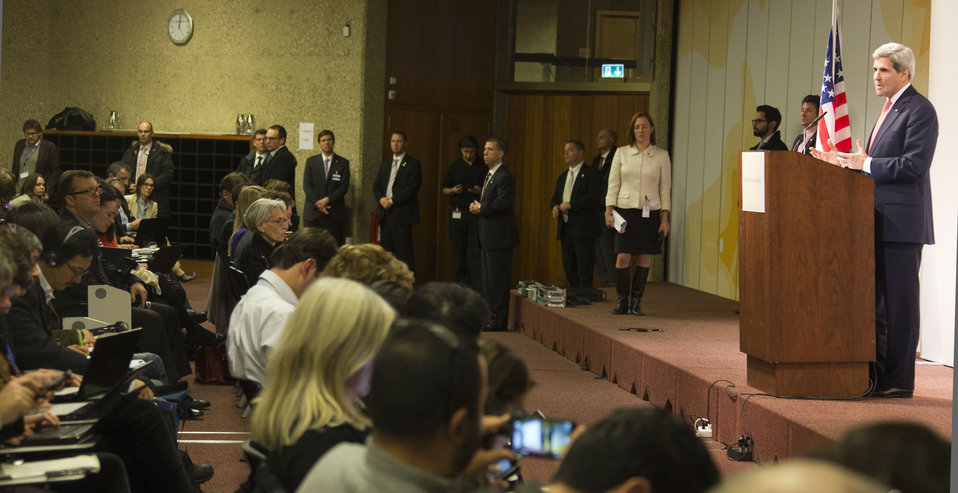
P5 1 Talks With Iran in Geneva, Switzerland

U.S. Secretary of State John Kerry addresses reporters and takes some of their questions during a news conference in Geneva, Switzerland, on November 24, 2013, after the P5 1 member nations concluded negotiations with Iran about its nuclear capabilities.